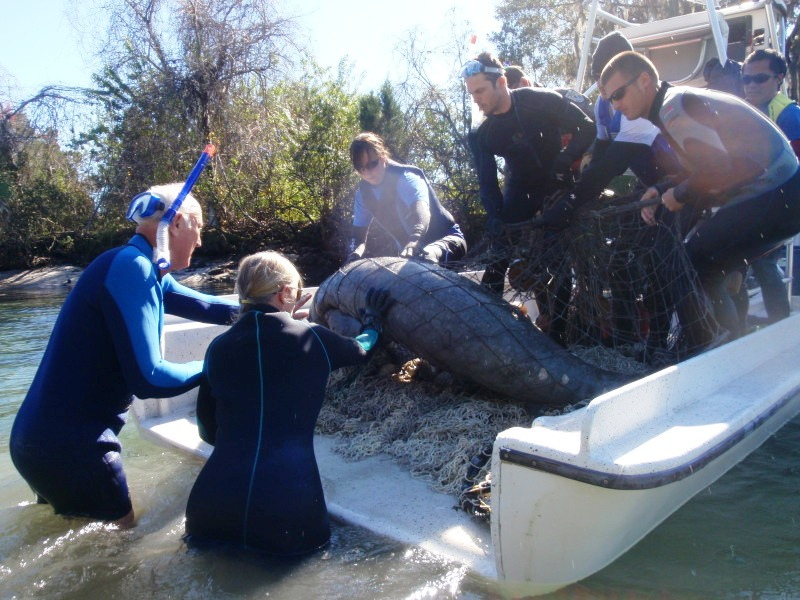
Endangered Florida manatee (Trichechus manatus), Crystal River National Wildlife Refuge, Florida

Photo credit: Tracy Colson

The Crystal River National Wildlife Refuge, was established in 1983 specifically for the protection of the endangered West Indian Manatee. This unique refuge preserves the last unspoiled and undeveloped habitat in Kings Bay, which forms the headwaters of the Crystal River. The refuge preserves the warm water spring havens, which provide critical habitat for the manatee populations that migrate here each winter.